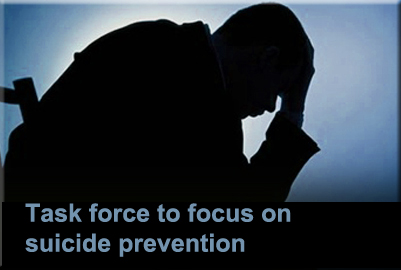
Suicide solution involves leadership